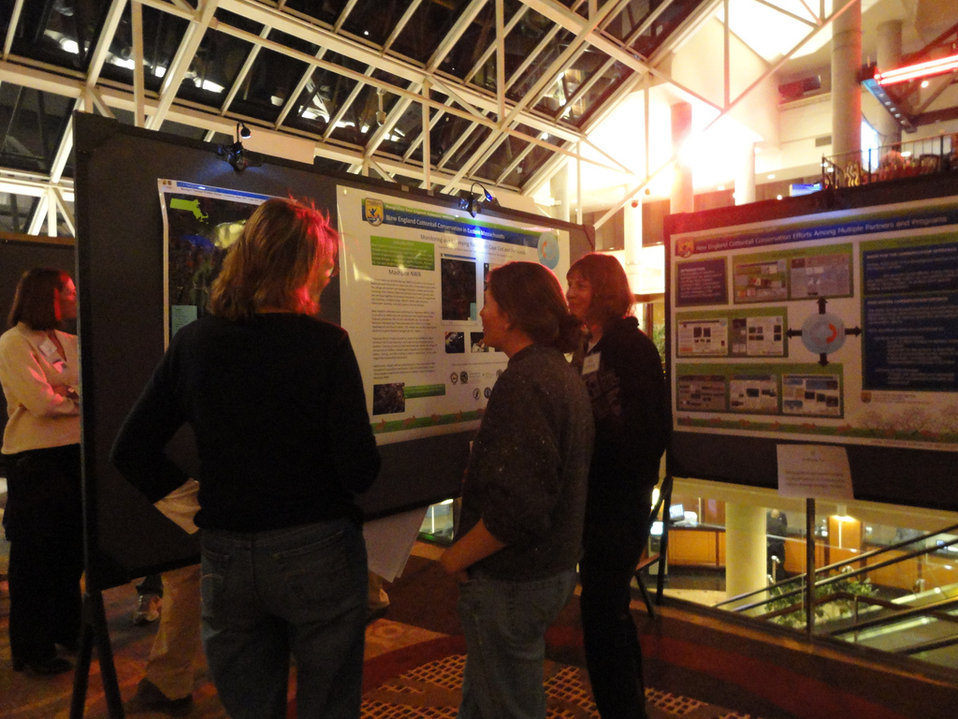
Poster Session

Biologists explaining their poster at the Tuesday night poster session at the Northeast Region Biologists Conference.